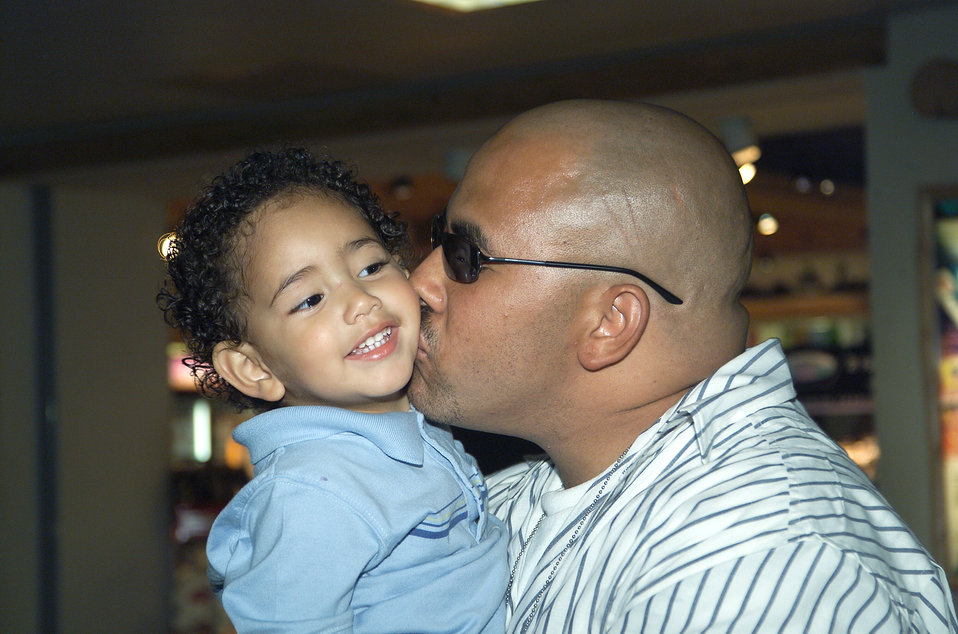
That's my boy

TUCSON, Ariz. -- Airman 1st Class Raymond Moore sees his son, DeAndre, for the first time in about eight months. Airman Moore arrived at Tucson International Airport here after being deployed to Southwest Asia. He was part of the first Army convoy mission to be led by Airmen. Airman Moore is assigned to the 355th Logistics Readiness Squadron at Davis-Monthan Air Force Base, Ariz.